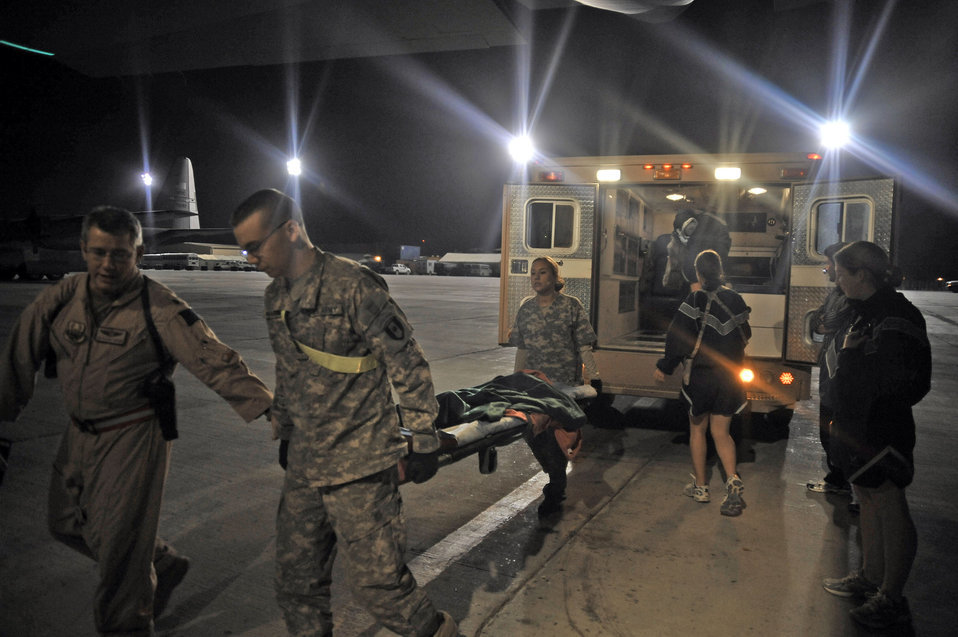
Kandahar Airmen fly missions of mercy

Airmen prepare to transport patients from an HC-130 Hercules during a routine channel mission at Camp Bastion, Afghanistan Oct. 6, 2009. These Airmen are assigned to the 451st Aeromedical Squadron at Kandahar Airfield, Afghanistan.